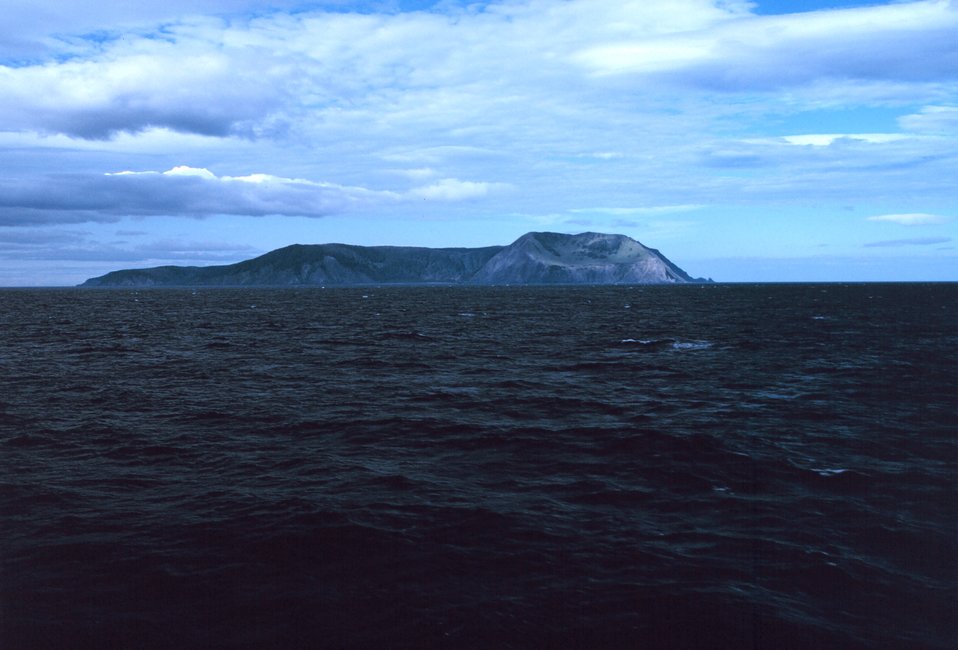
Unidentified island on a clear day.